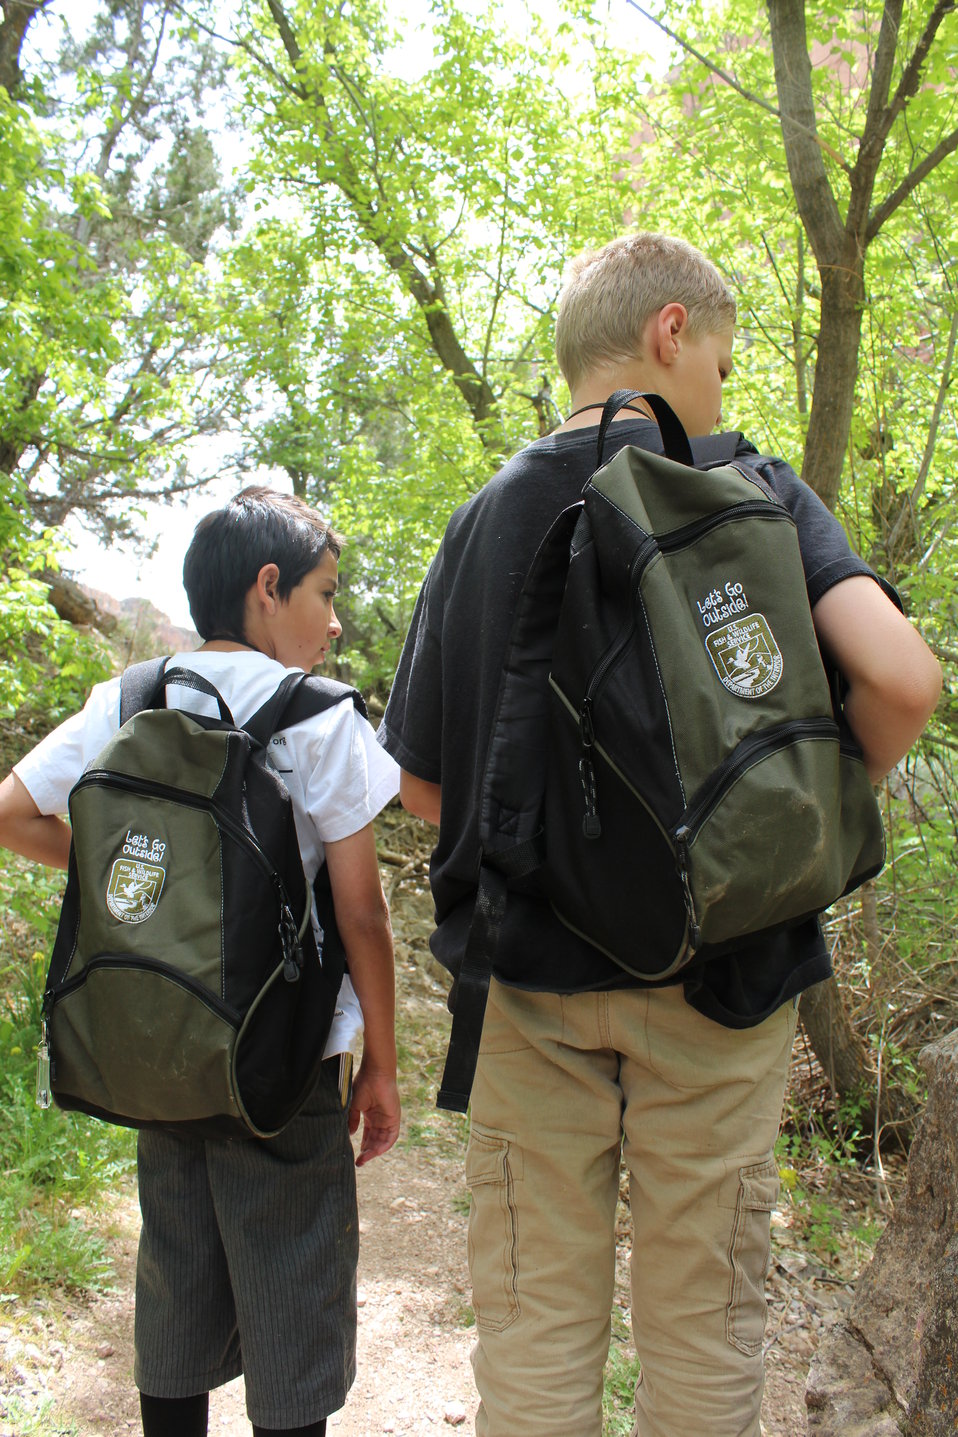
Let's Go Outside!

The 'Let's Go Outside' program promotes families and friends to connect with America's Great Outdoors.

Location: Jones Hole National Fish Hatchery Hiking Trail

Credit: Jaclyn Kircher / USFWS

Photo Contest Entry #141